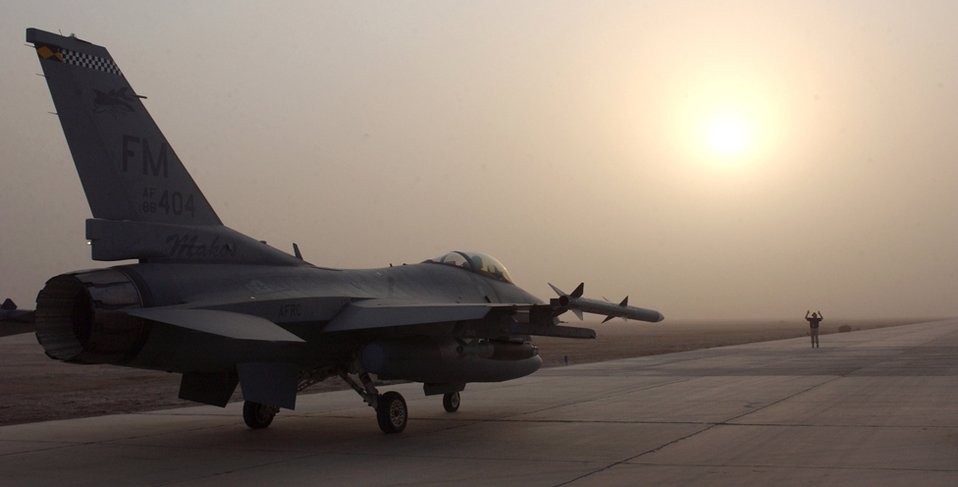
'Makos' support ground forces

ALI BASE, Iraq -- After spending the night here because of a weather diversion, an F-16 Fighting Falcon lines up for takeoff Oct. 18. The aircraft is of the 332nd Expeditionary Fighter Squadron, Balad Air Base, Iraq. The fighters deployed from the 482nd Fighter Wing at Homestead Air Reserve Base, Fla. They provide air support to Operation Iraqi Freedom coalition ground forces.